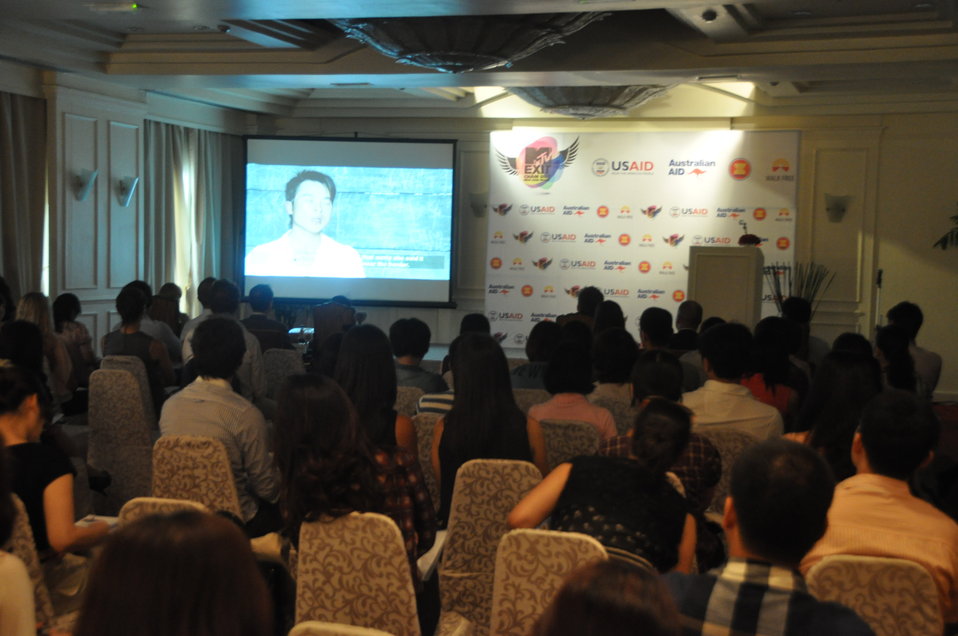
USAID joins MTVExit to launch documentary and awareness campaign against human trafficking